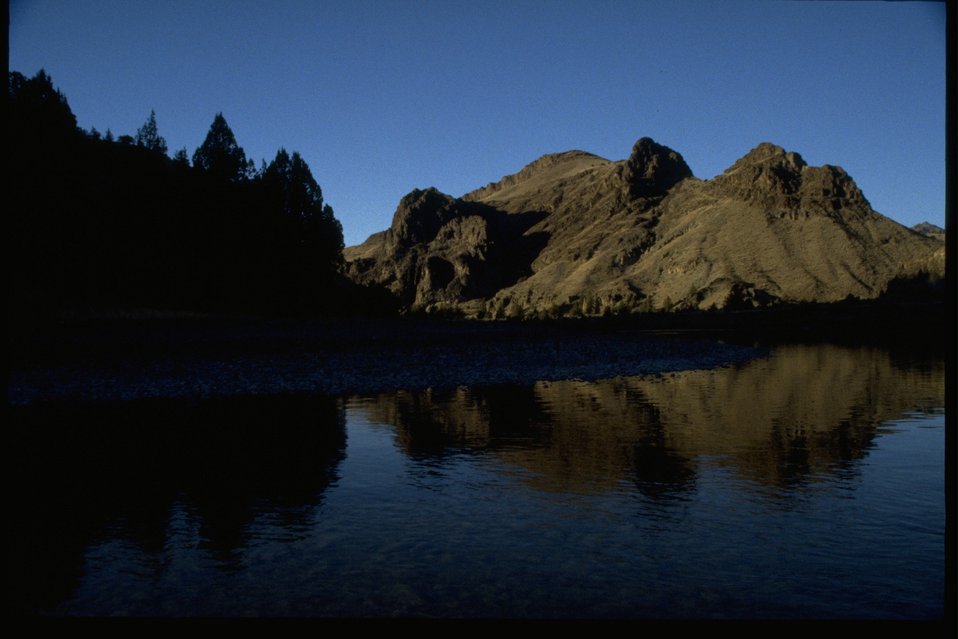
A scenic mood shot of the John Day River with silhoutted hills.